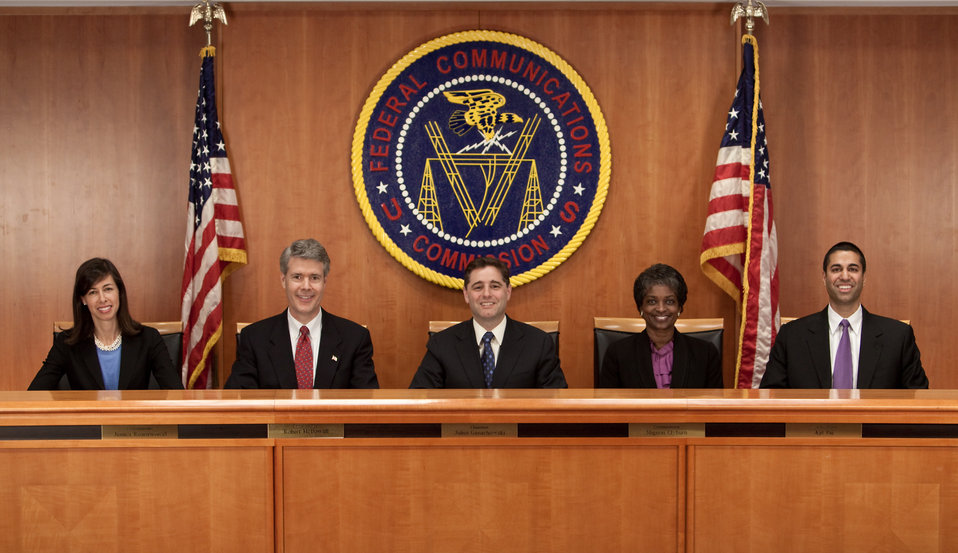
FCC Chairman and Commissioners - May 2012

L to R: Commissioner Jessica Rosenworcel, Commissioner Robert M. McDowell, Chairman Julius Genachowski, Commissioner Mignon Clyburn and Commissioner Ajit Pai

May 24, 2012 - FCC Headquarters | Washington, DC
[Federal Communication Commission / Official Photo]